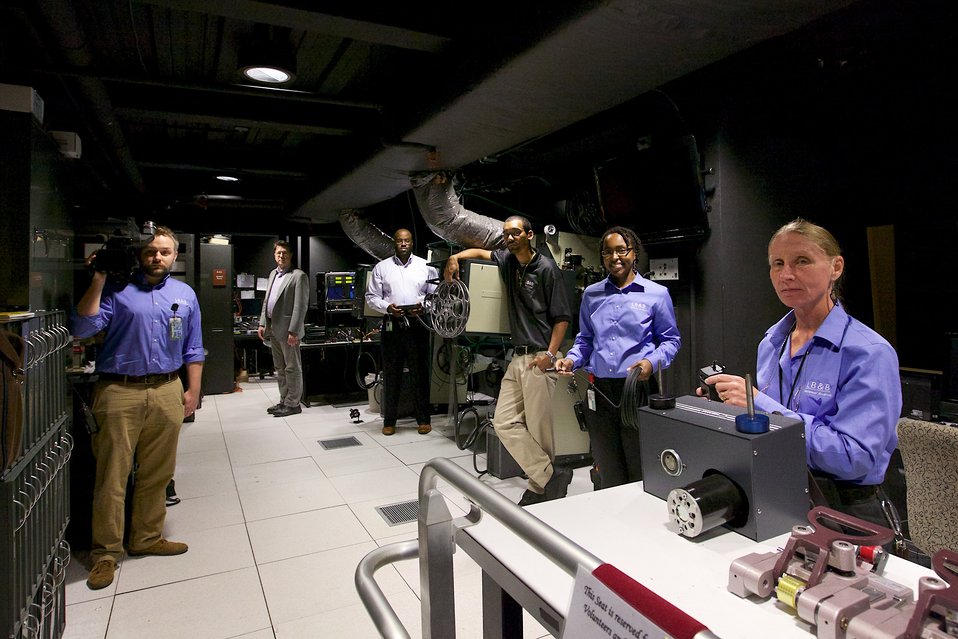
LB&B A/V staff Nicolas Moushey, Richard Taylor, Jeffrey Jackson, Jason Winston, Jamie Atkinson, Julie Reid pose in the McGowan Theater control booth; Location: Archives 1 - McGowan Theater Booth, Washington , D.C.